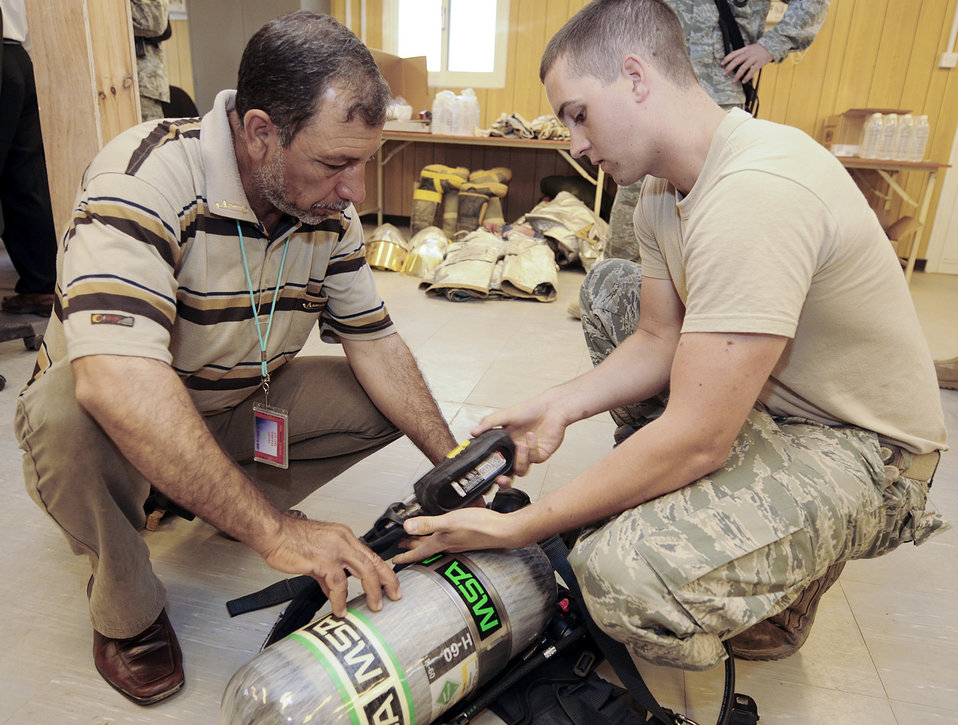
Iraqi firefighters training

Airman 1st Class Colton Balthazor shows an Iraqi firefighter how to operate an oxygen tank during training April 30, 2010, at Joint Base Balad, Iraq. Airman Balthazor is a 332nd Civil Engineer Squadron firefighter deployed from Anderson Air Force Base, Md.